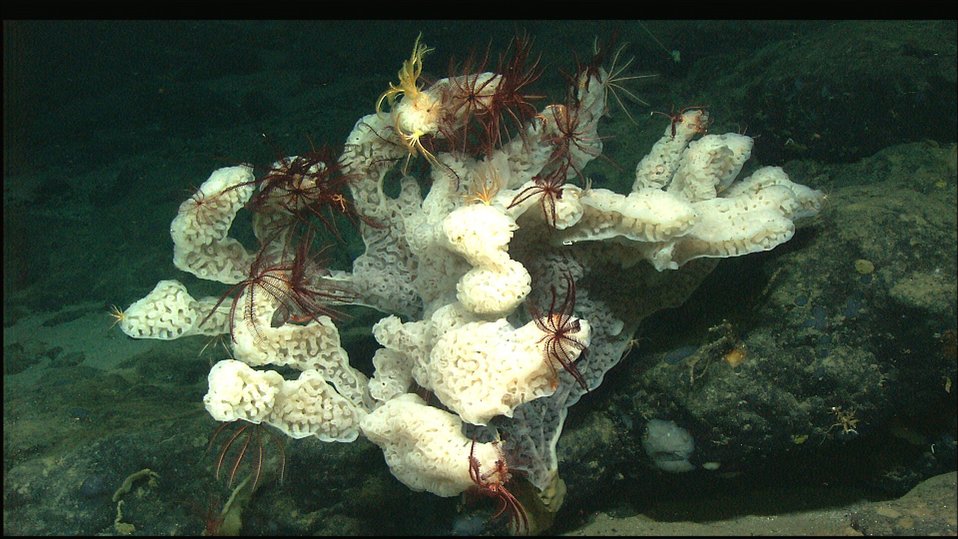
Cranberry crinoids and golden crinoids hang out on the surface of large white sponge.